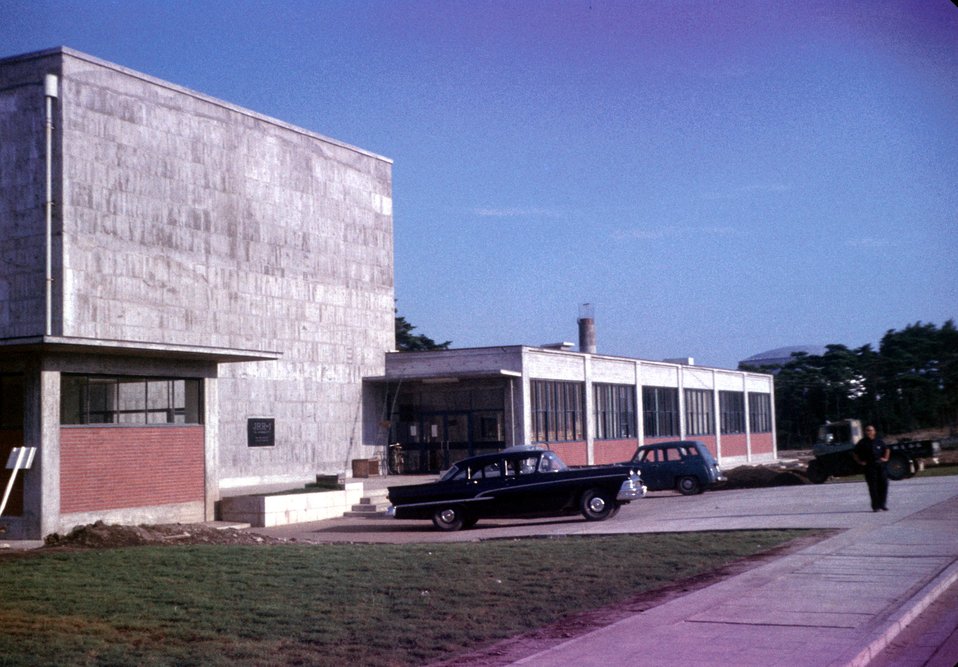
Japanese Research Reactor #1. 50kw Water Boiler -- A.I. c. 1957